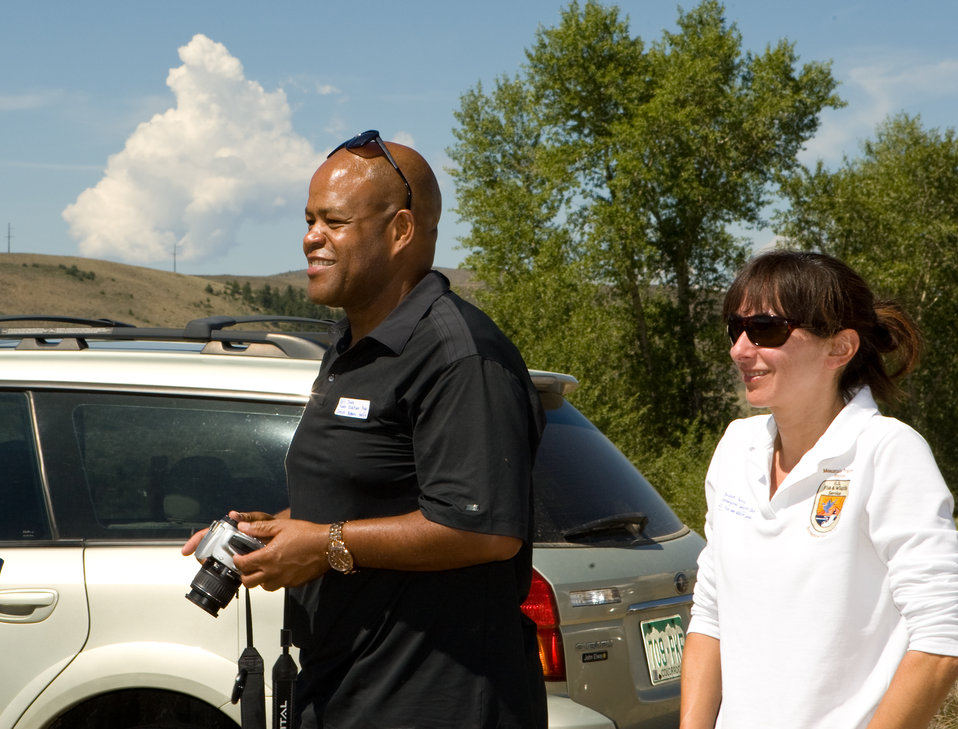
Colorado Rare Plant Conservation Initiative

The Colorado Rare Plant Conservation Initiative (RPCI) is a partnership of 23 statewide and regional agencies, private organizations, and academic institutions working to conserve 121 rare plants in Colorado. As part of these efforts the group developed the Colorado Rare Plant Conservation Strategy, developed Best Management Practices to reduce energy development impacts, addressed climate change, and developed focused strategies for the conservation of individual species at eight priority landscapes. The group has also worked to coordinate volunteer efforts for plant conservation across the state.